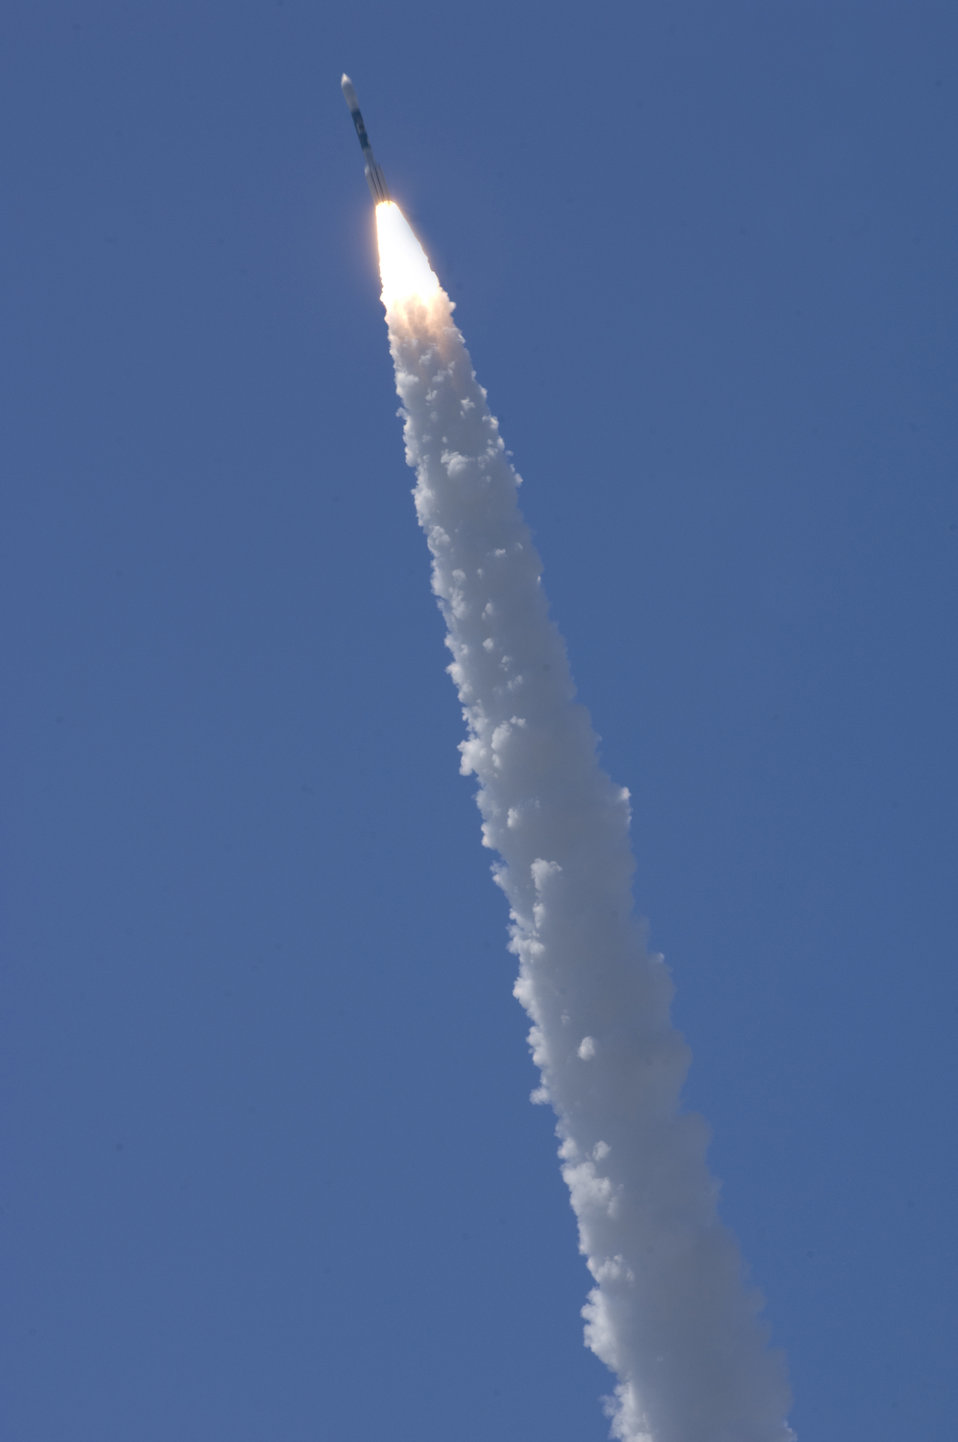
Delta II launch successful

A Delta II rocket successfully lifted off at 1:24 p.m. May 5 from Space Launch Complex-2 at Vandenberg Air Force Base, Calif. The rocket carried an experimental satellite for the Missile Defense Agency's Space Tracking and Surveillance System Advanced Technology Risk Reduction mission.